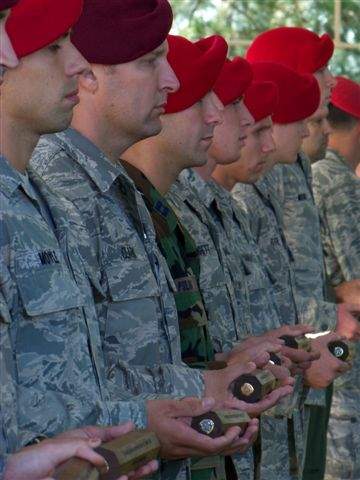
Brothers in arms march for cause

Twelve special tactics Airmen display batons presented to the Special Tactics Training Squadron commander during a ceremony Oct. 16, 2009, at Hurlburt Field, Fla. The batons were carried by 12 Airmen who marched from Lackland Air Force Base, Texas, to Hurlburt Field during a memorial rucksack march honoring fallen special operations forces members.